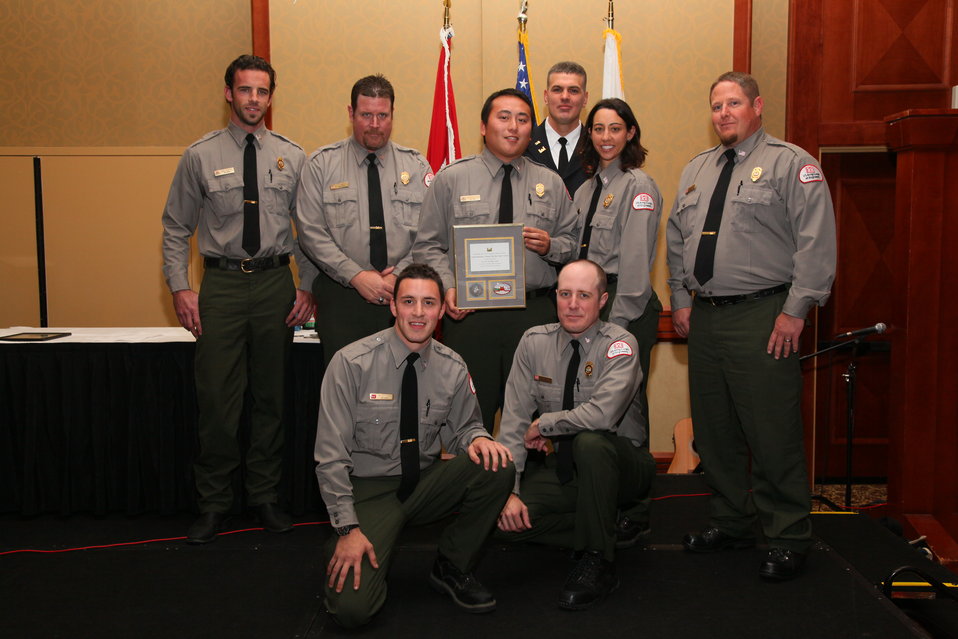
Sacramento District Holiday Party 2011